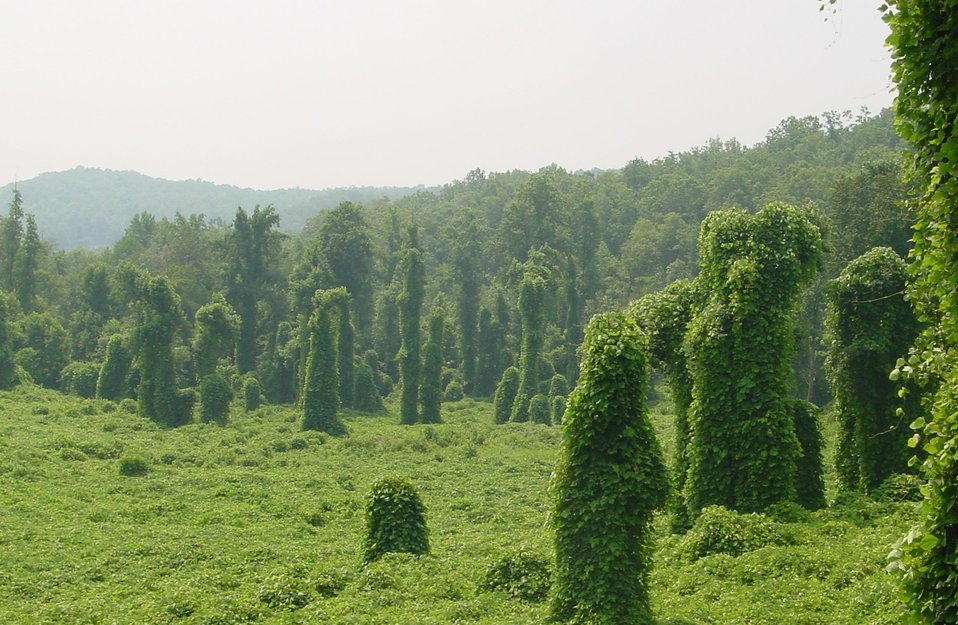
fhp1

Kudzu is a climbing, semi-woody perennial vine that kills trees by shading them and spreads inexorably, mostly through soil movement and vegetative growth.